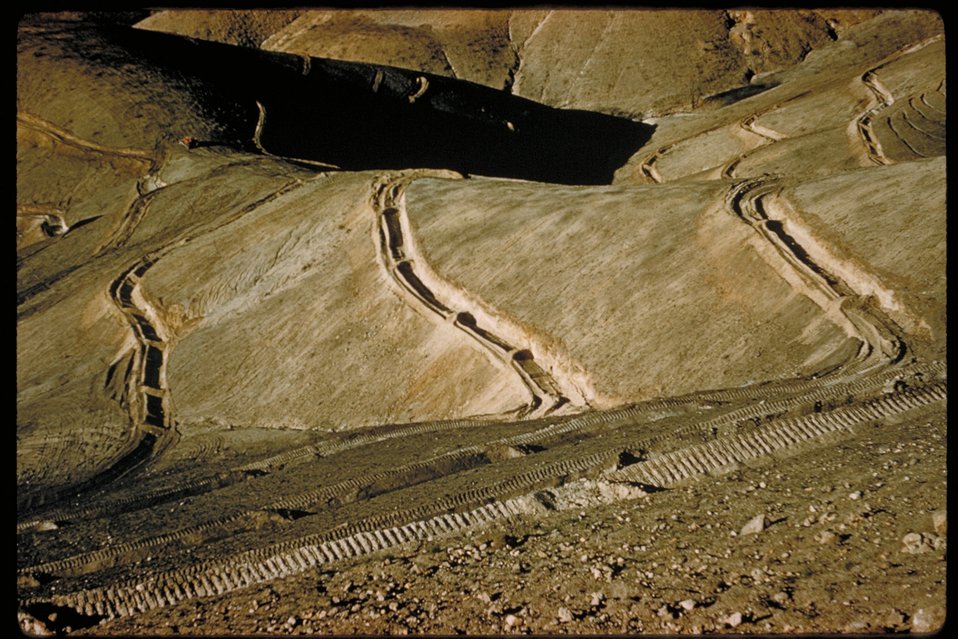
Fire Rehab Boise Front Four Rivers Field Office LSRD Lower Snake River District